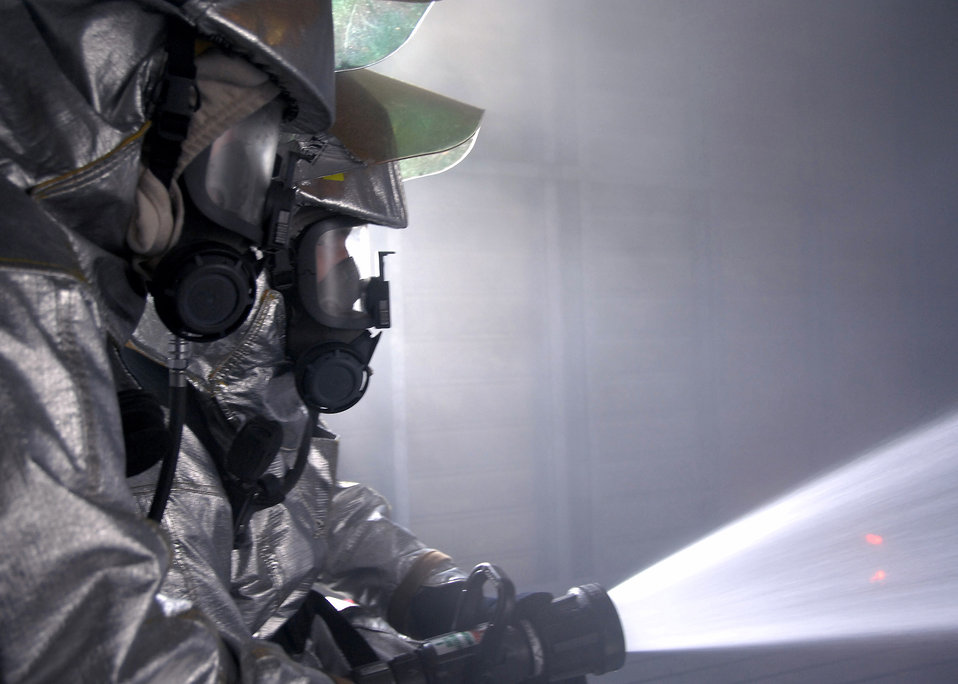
We didn't start the fire...

At Eielson Air Force Base, Alaska, two firefighters direct water toward beacons with red flashing lights during a training operation Sept. 13. The flashing lights simulate a fire for the 354th Civil Engineer Squadron fire protection flight.